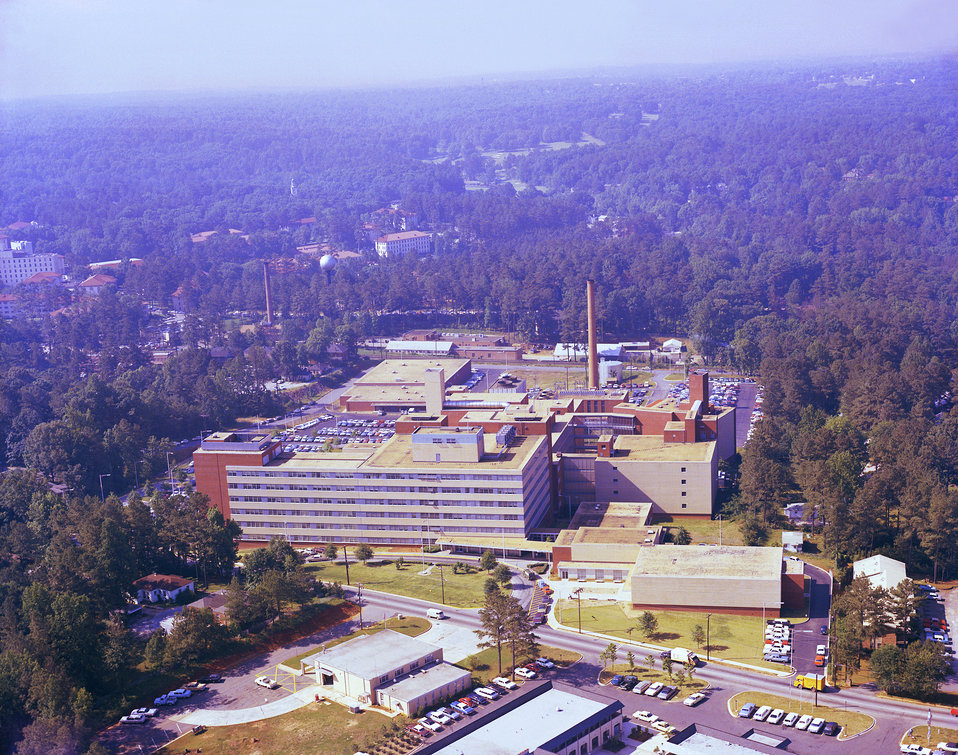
This historic aerial view depicts the appearance of the Centers for Disease Control and Prevention's (CDC) geographic presence in 1967.